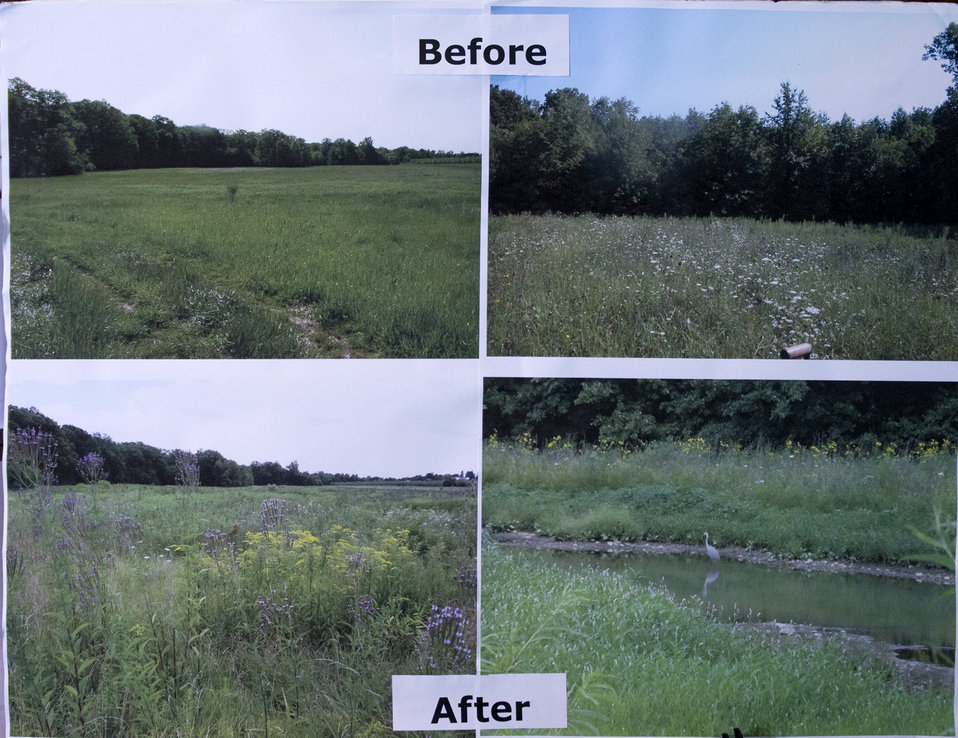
These are before and after photographs showing good conservation practices on the Kuhn family farm in Pennsylvania during Agriculture Secretary Tom Vilsack visit that highlighted U.S. Department of Agriculture's (USDA) conservation practices.